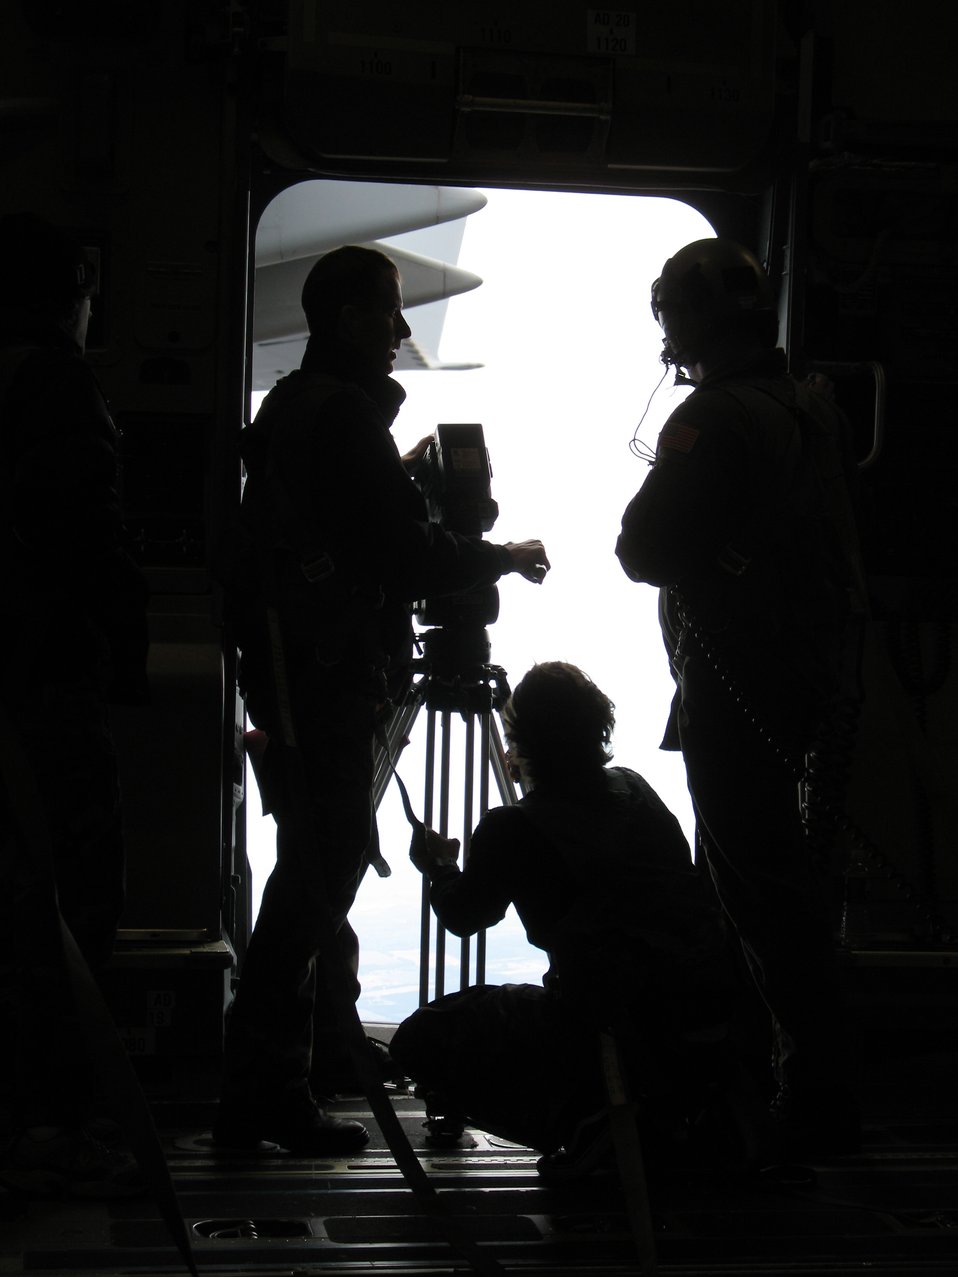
Air Force ads to feature Charleston Airmen

Members of the GSD&M Advertising film crew prepare to document a tactical descent from the troop door of a C-17 Globemaster III Feb 9. Airmen from Charleston Air Force Base, S.C., will be featured in an Air Force advertising campaign set to air in March.